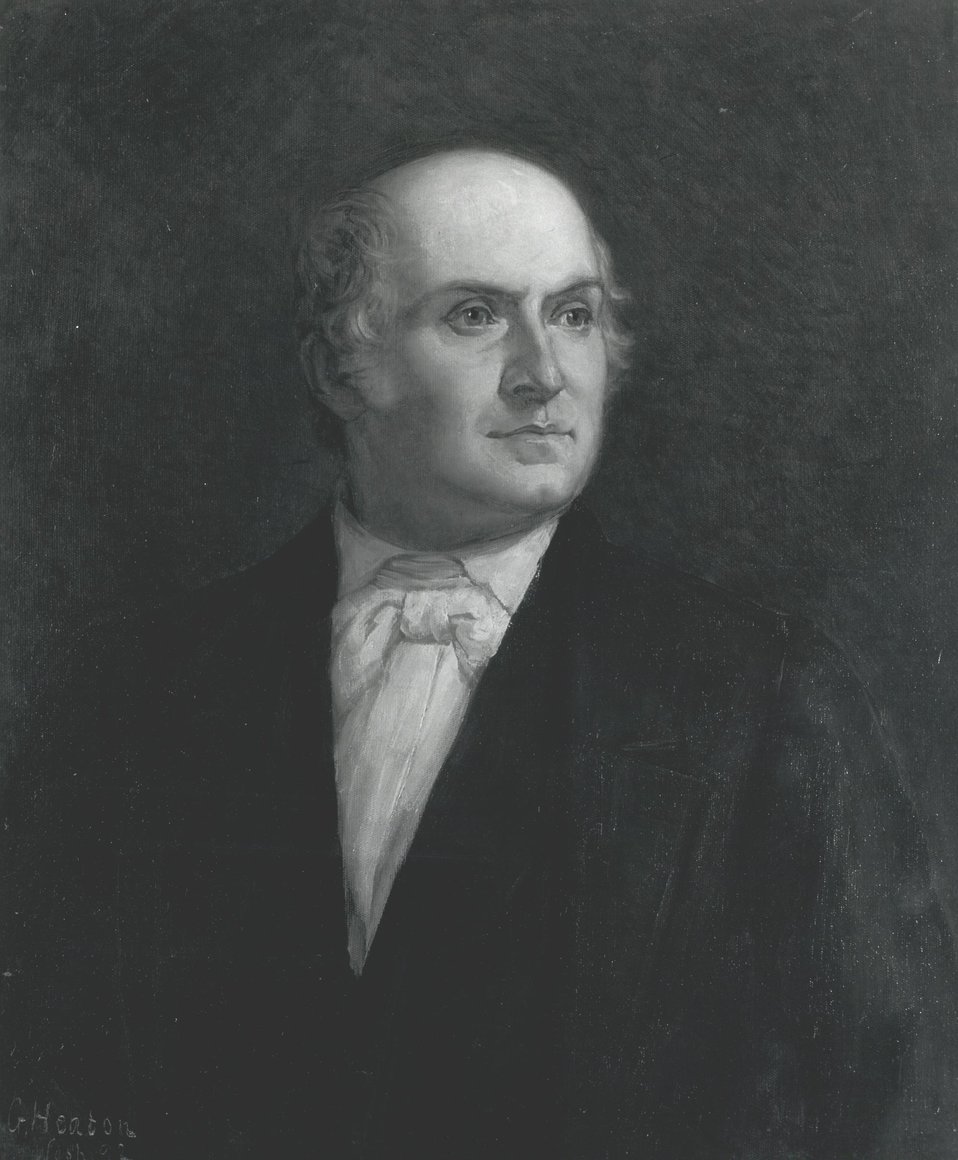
Abel P. Upshur, U.S. Secretary of State, July 24, 1843 to February 28, 1844